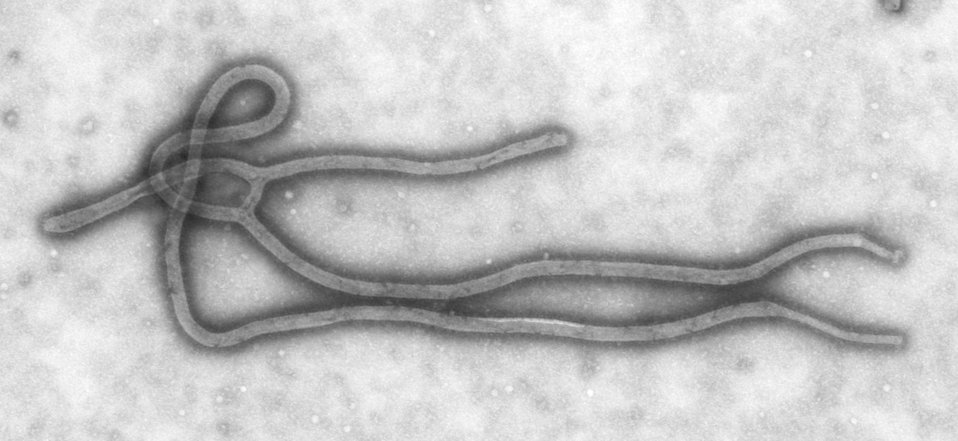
Created by CDC microbiologist Cynthia Goldsmith, this transmission electron micrograph (TEM) revealed some of the ultrastructural morphology displayed by an Ebola virus virion. See PHIL 10816 for a colorized version of this image.